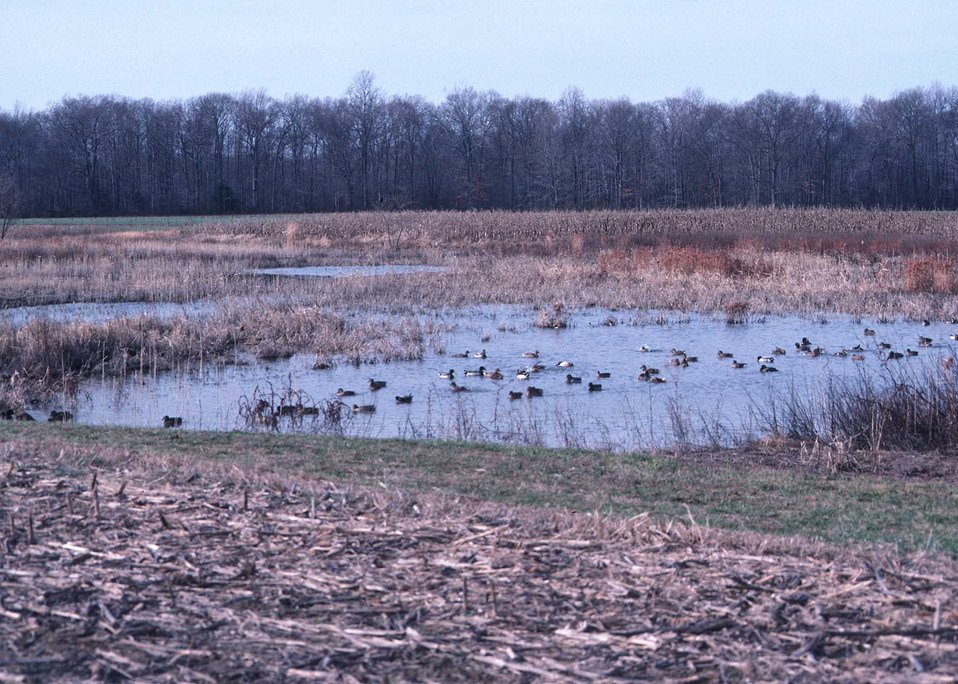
Waterfowl on shallow pond in a cornfield in Delaware.